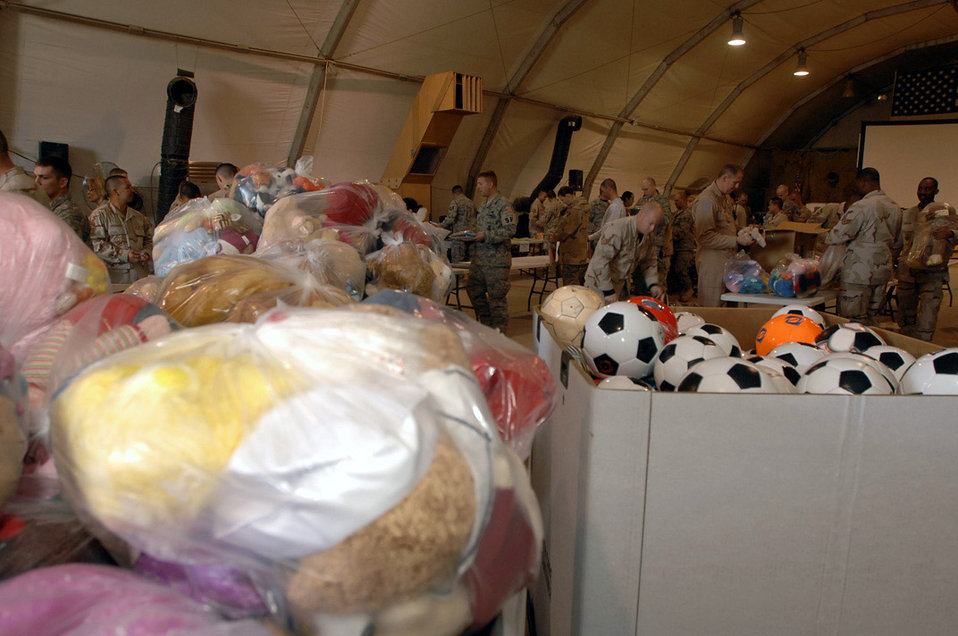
Iraqi Operation Child donations packed, ready

After only a few hours of sorting and organizing at Ali Base, Iraq, Dec. 22, more than four tons of supplies are now ready to be given out in support of Operation Iraqi Child. Airmen on base collected thousands of school supply items, soccer balls, stuffed animals and toys in just over a month, from family and friends in the U. S. The donated items will be given to Iraqi families in the An Nasiriyah area.